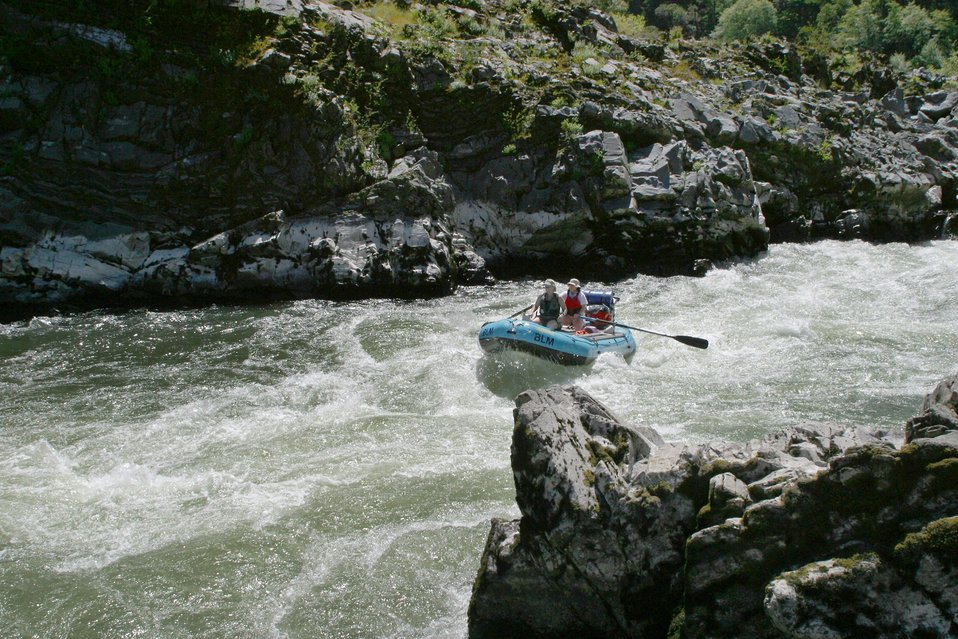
Wild section of the Rogue River from Grave Creek to Foster Bar May 19 to May 22.